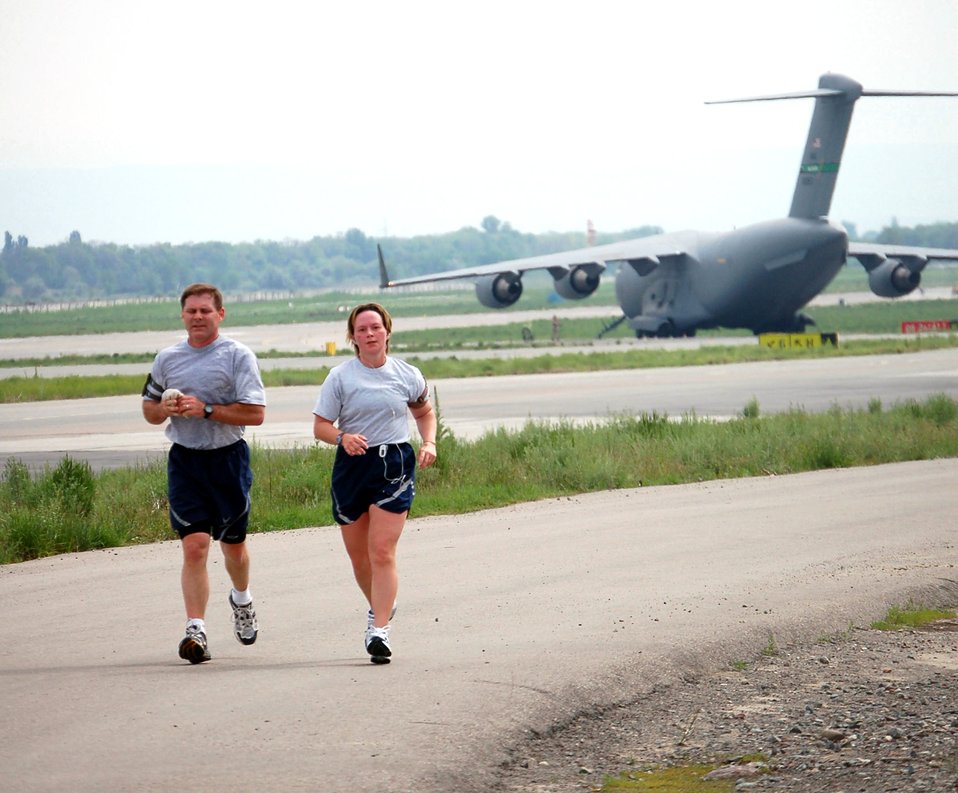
A world away, Airmen enjoy hometown tradition

Master Sgt. Dan Wilcox keeps pace with Tech. Sgt. Jenny Livingston as they pass a C-17 Globemaster III on the final stretch of the Bloomsday Away 12K race at Manas Air Base, Kyrgyzstan, on Sunday, May 7, 2006. The Bloomsday race is annual tradition in Spokane, Wash. This year, Airmen brought their own version of the race to Manas. Sergeant Wilcox is with the 22nd Expeditionary Air Refueling Squadron and Sergeant Livingston is with the 376th Air Expeditionary Wing.